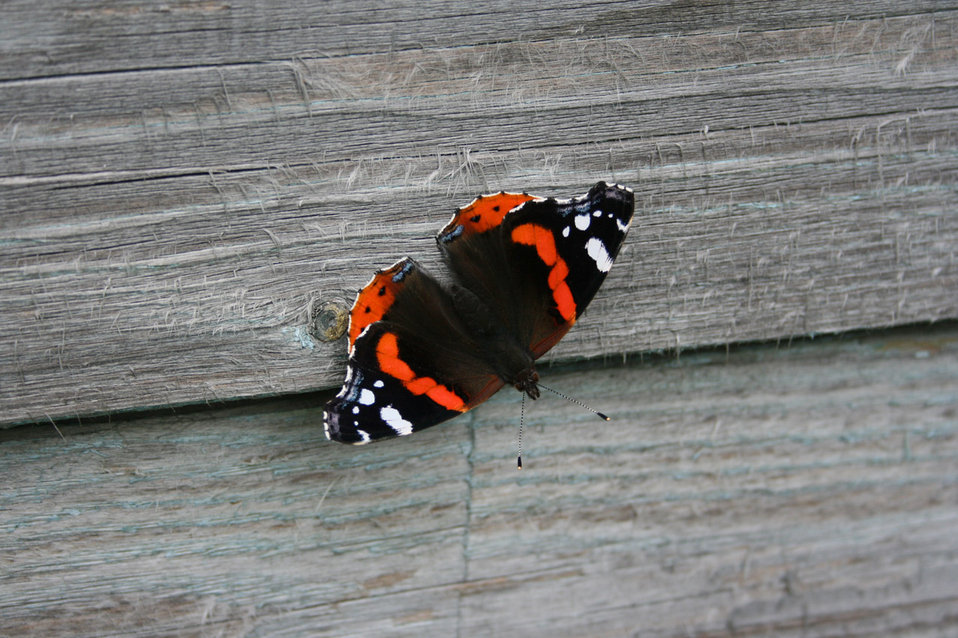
Butterfly on a planking.